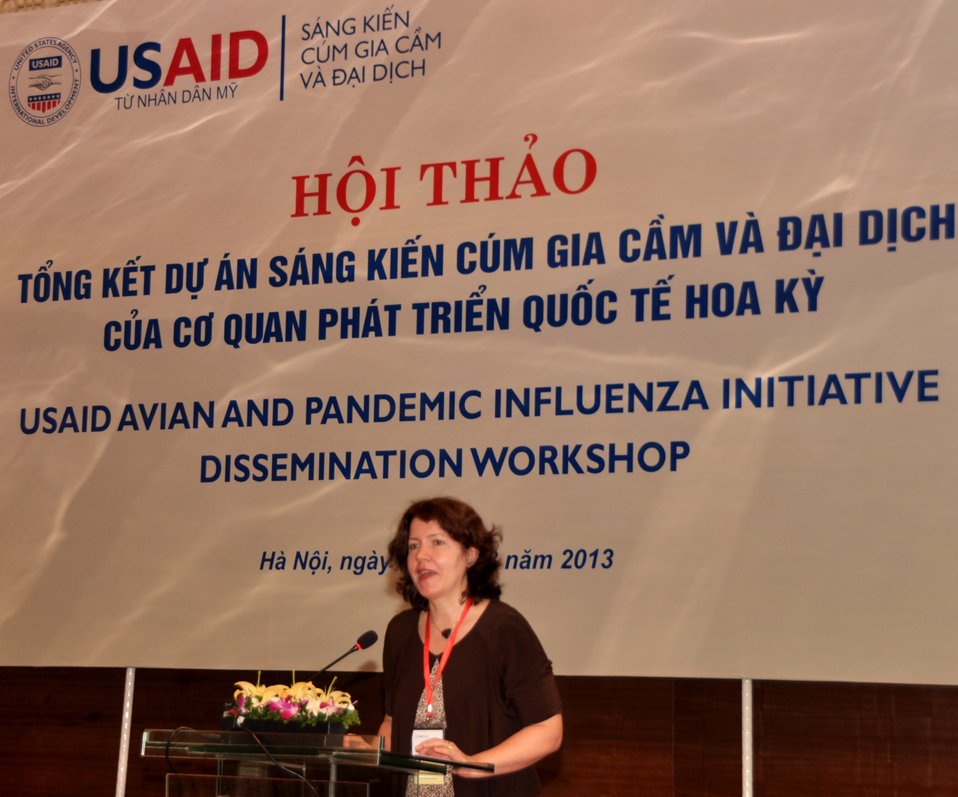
USAID Office of Health Director Laurel Fain addresses the USAID Avian and Pandemic Influenza Initiative Dissemination Workshop.

Dissemination Workshop
Hanoi, August 6, 2013.